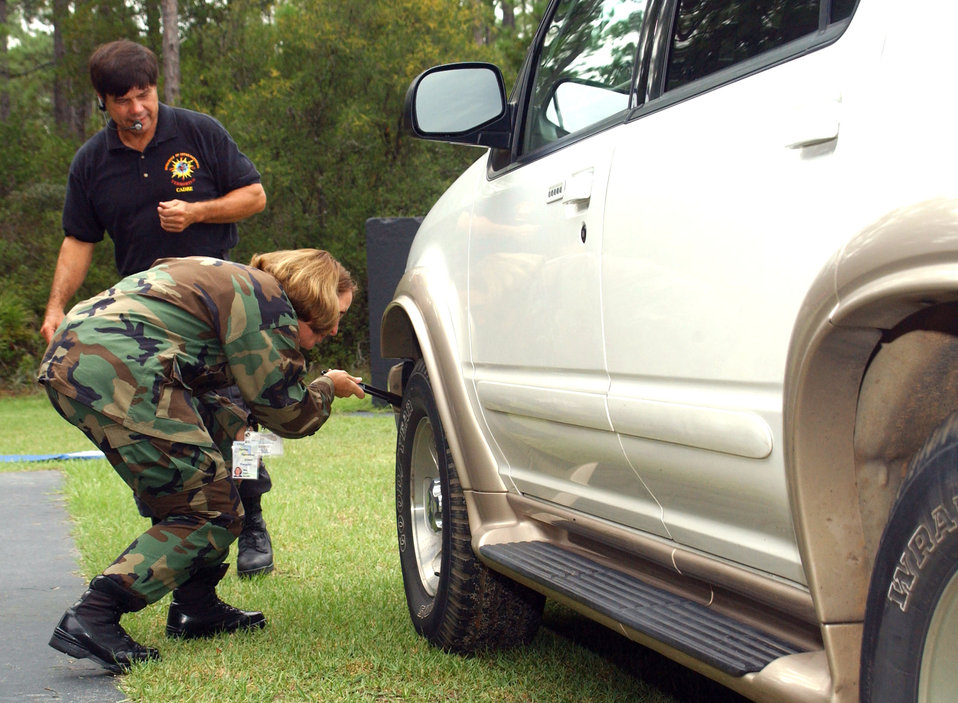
Dynamics of terrorism

Maj. Kari Smith inspects a vehicle for explosive devices under the watchful eye of instructor James Wilson at Hurlburt Field, Fla., Sept. 13. Major Smith is a student in the U.S. Air Force Special Operations School's Dynamics of International Terrorism course, which offers students a basic awareness of the motivation, capabilities and threat posed by terrorist groups.